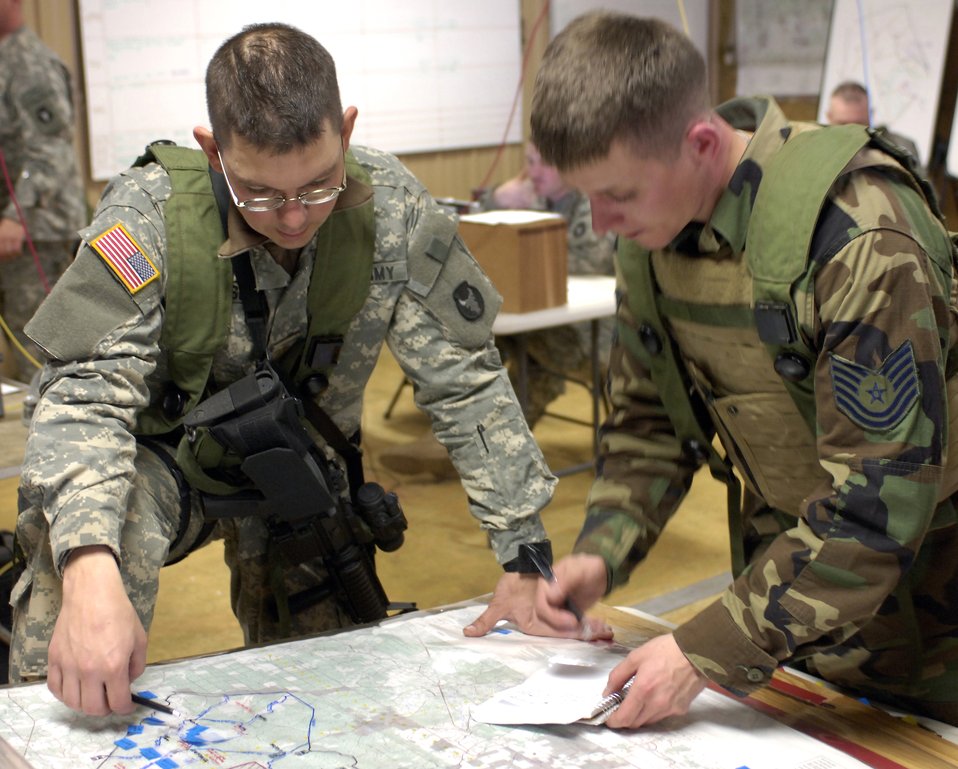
Air Warrior II

FORT POLK, La. (AFPN) -- Army Maj. Shannon Richardson updates Tech. Sgt. Dan Kurtin during an Air Warrior II exercise Feb. 9. Sergeant Kurtin is a Guardsman with the 169th Air Support Operations Squadron in Peoria, Ill. Major Richardson is an operations officer with the 1-133rd Infantry Battalion.